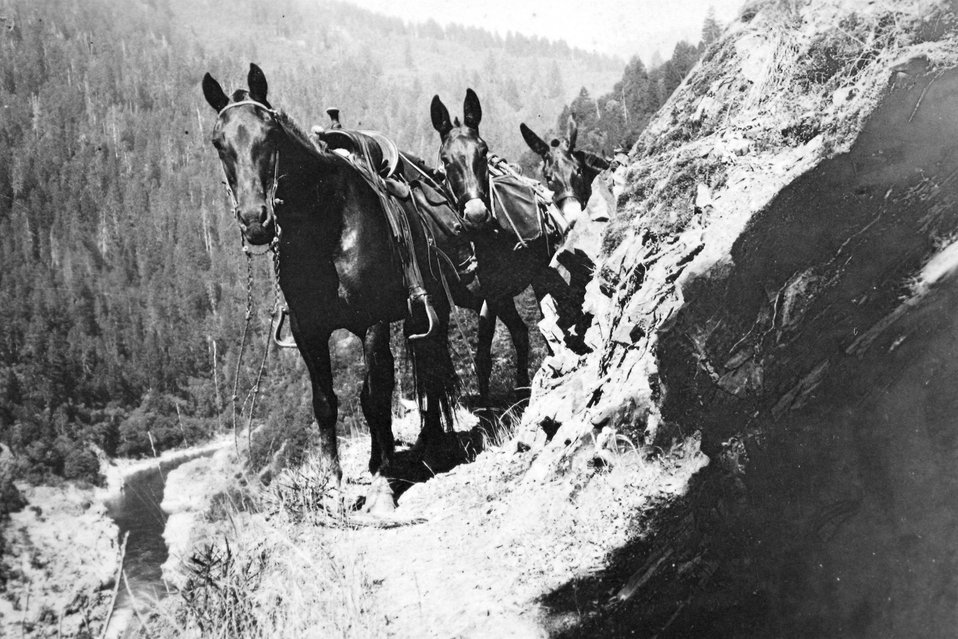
My pack train upstream from Whiskey Creek. Three mules around the gluff do not show. Roguer River in the background." L.J. Cooper 1945